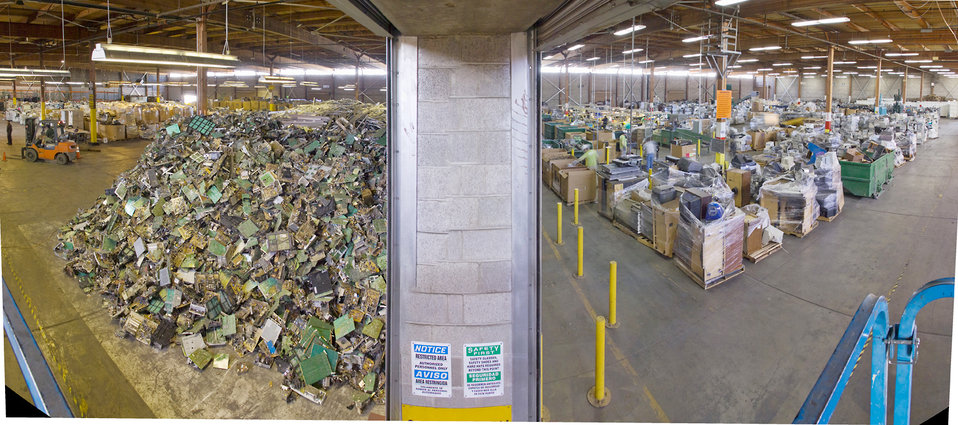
Green businesses

Piles of used computer parts are waiting to be recycled at California Electronic Asset Recovery at the former Mather Air Force Base in Sacramento, Calif. CEAR workers recycled more than 15 million pounds of e-waste last year.